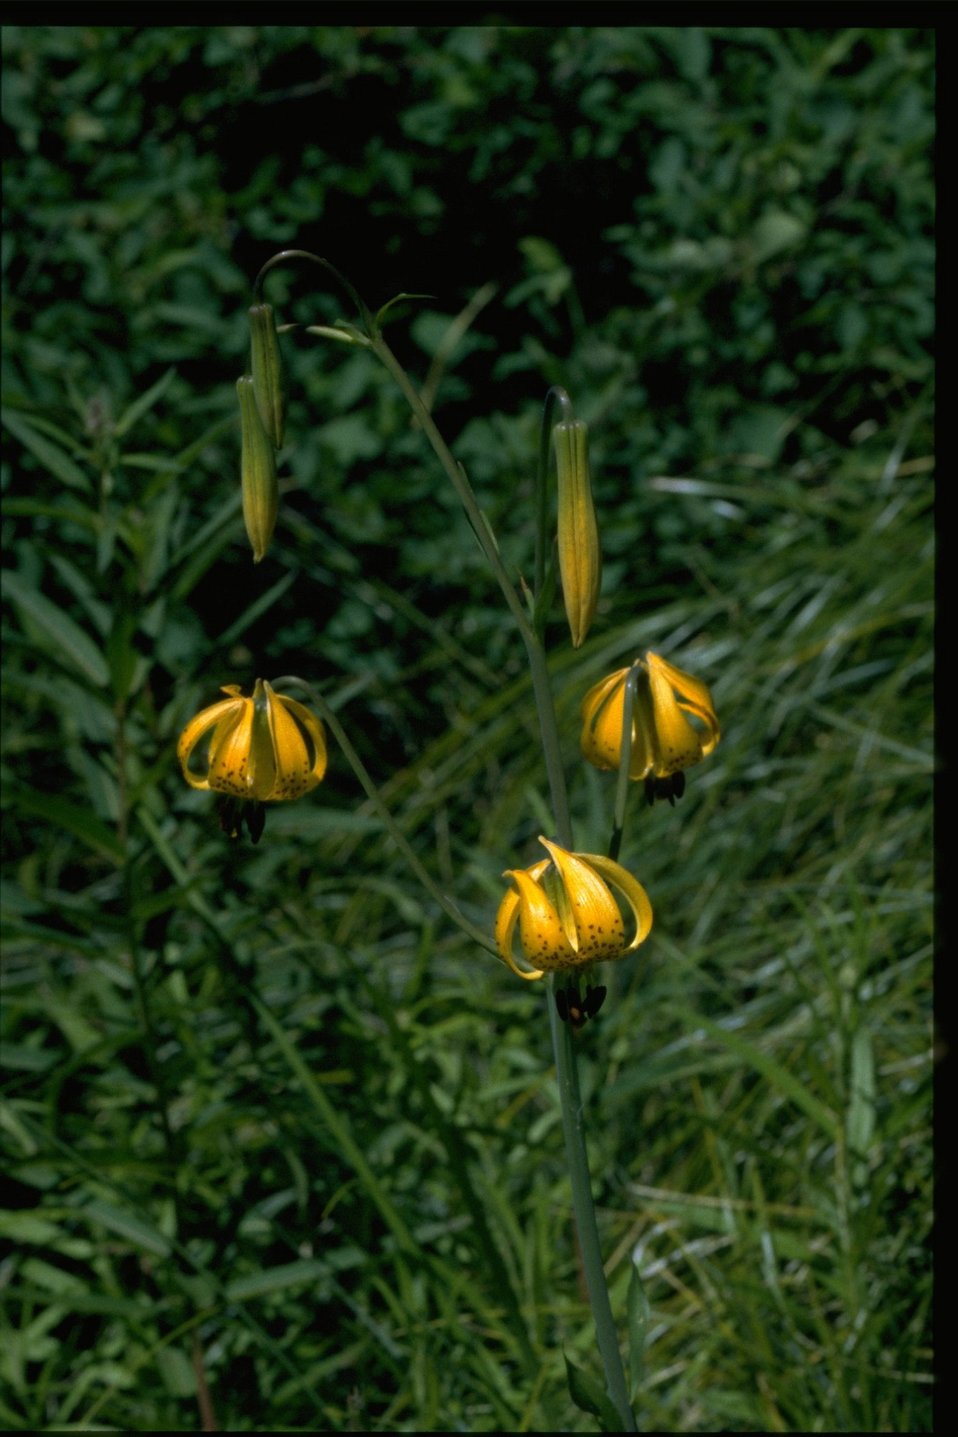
Medium shot of Lilium columbianum.